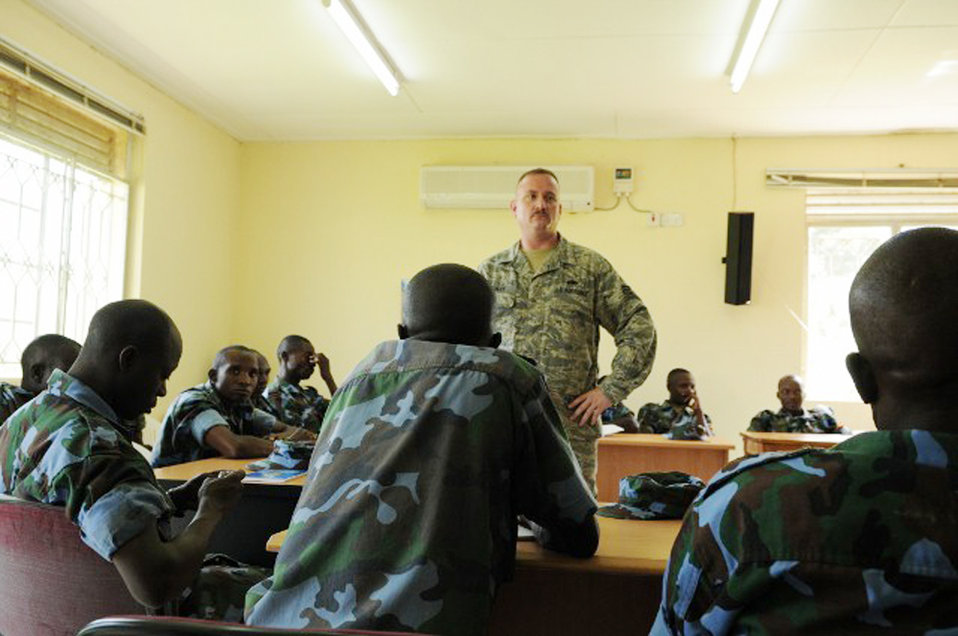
17th Air Force Airmen enhance Ugandan humanitarian airlift capability

Tech. Sgt. Greg Henley leads a class on conducting airdrops during a theater security cooperation event with Ugandan peoples defense forces soldiers Aug. 26 in Entebbe, Uganda. Sergeant Henley is assigned to the 86th Aircraft Maintenance Squadron at Ramstein Air Base, Germany.